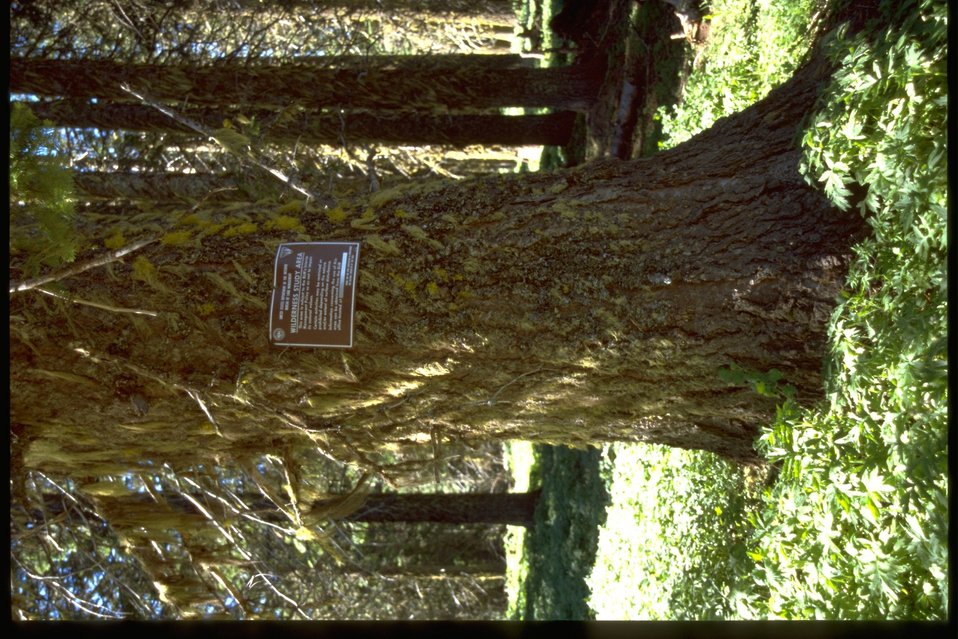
Wilderness Study Area sign.